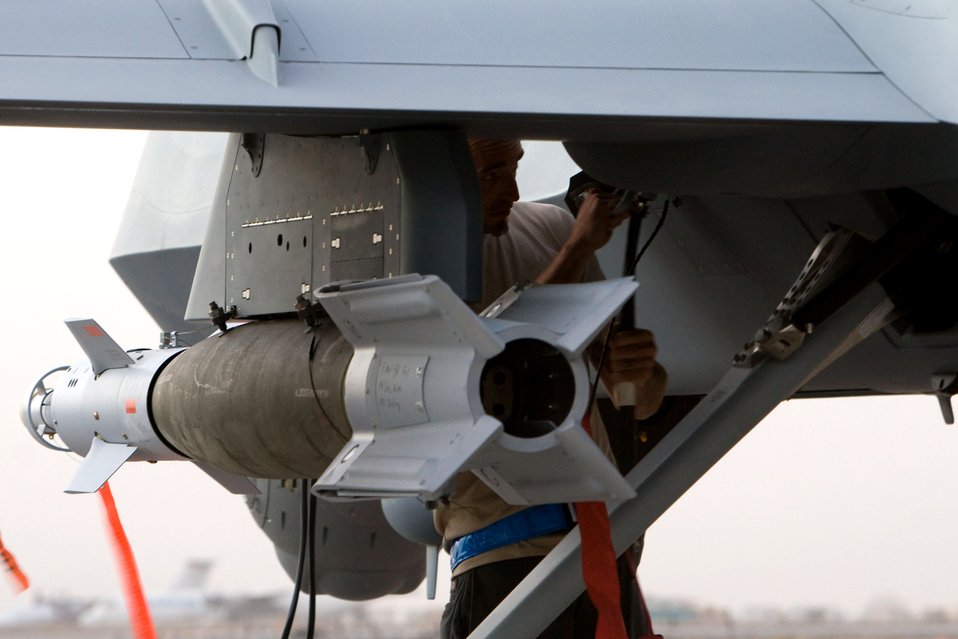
Air Force's hunter-killer UAV now flying in Afghanistan

An aircrew member inspects the weapons loadout on an MQ-9 Reaper before it takes off on a mission in Afghanistan Oct. 1.